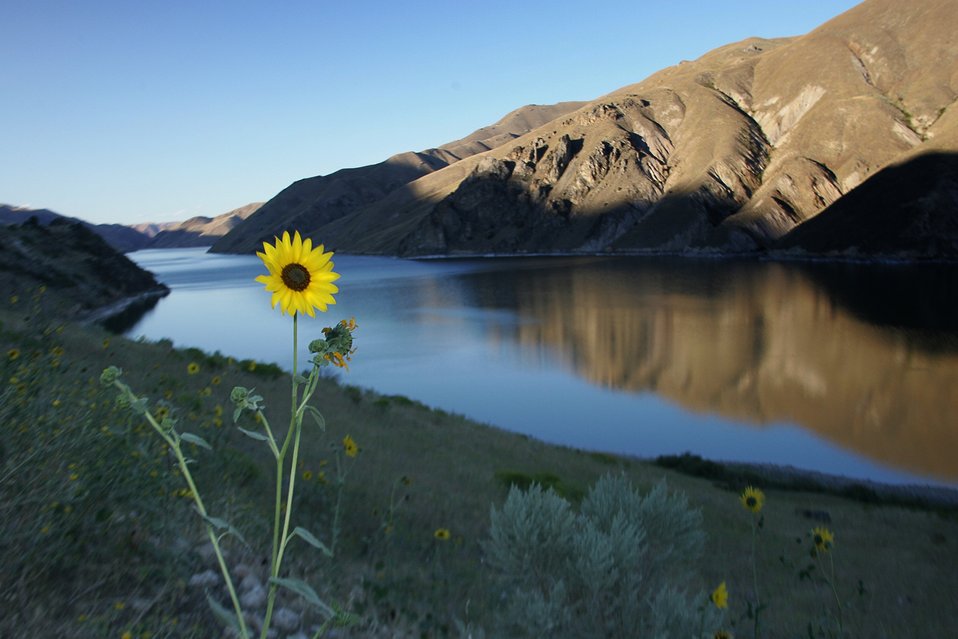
Snake River Backcountry Byway looing north along the Snake River.